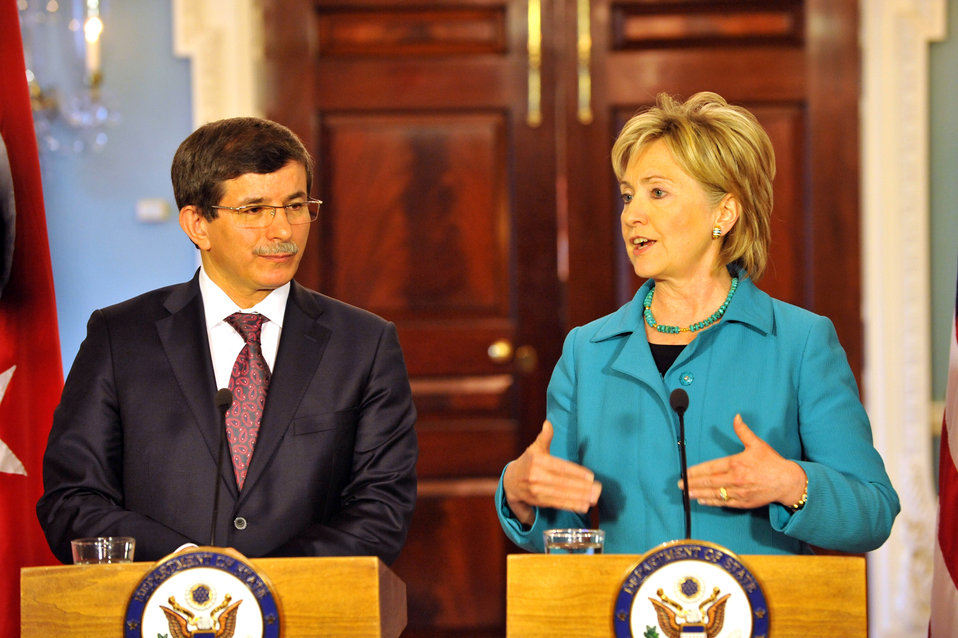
Secretary Clinton Meets With Turkish Foreign Minister

U.S. Secretary of State Hillary Rodham Clinton meets with Turkish Foreign Minister Ahmet Davutoglu at the U.S. Department of State in Washington, DC June 5, 2009.